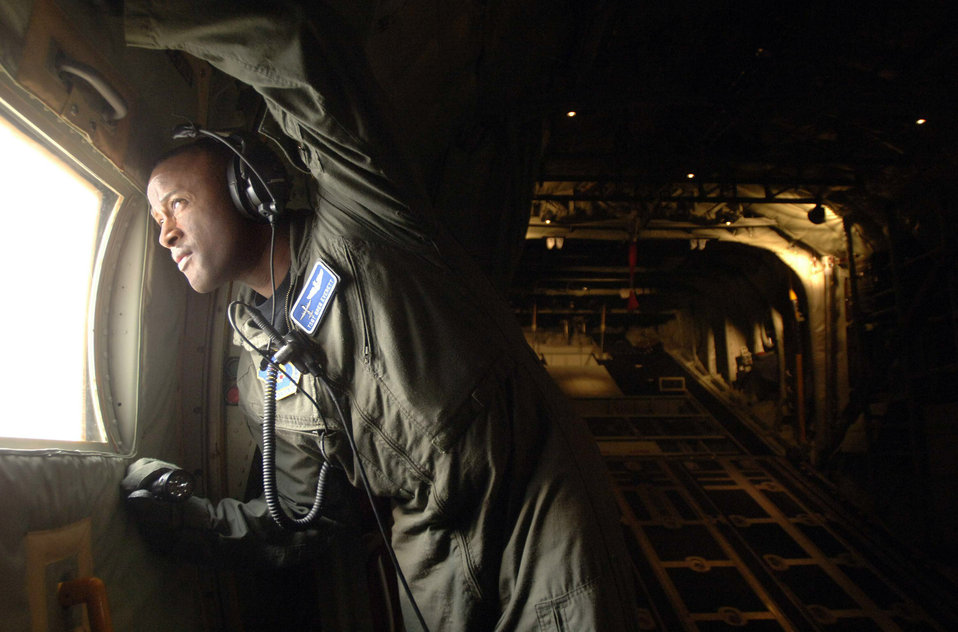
Ramstein welcomes new J-model C-130

Minutes after departure from Spangdahlem Air Base, Germany, Tech. Sgt. Greg Everett, a C-130J Super Hercules loadmaster, performs a visual inspection of the wings and engines of a new J-model with fewer than 24 hrs of logged flight time. The aircraft was completing the last leg of its trans-Atlantic journey from the aircraft assembly plant in Marietta, Ga. to its new home station at Ramstein AB, Germany. . This J-model is the first of 14 aircraft that are scheduled to arrive at Ramstein over the next 12 months to replace the older E-models there.